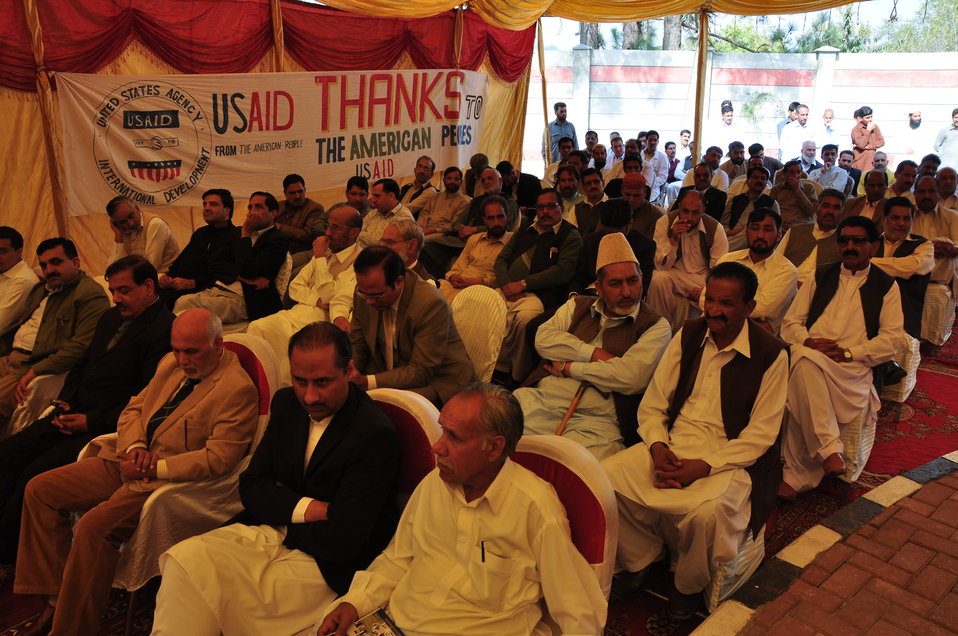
Dhirkot Reconstructed Hospital Inauguration Pakistan Reconstruction Program 16